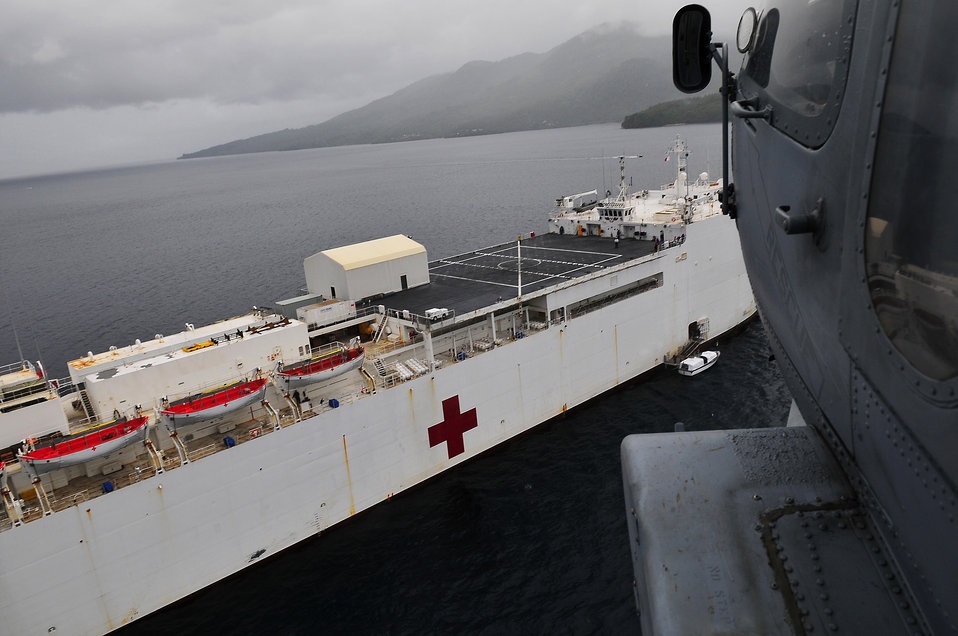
An MH-60S Knighthawk Comes in for a Landing

An MH-60S Knighthawk, from Helicopter Sea Combat (HSC) Squadron 23 “Wild Cards”, comes in for a landing to the Military Sealift Command hospital ship USNS Mercy (T-AH 19) on July 21, 2010, in Ternate, Indonesia. Mercy is deployed for Pacific Partnership 2010, the fifth in a series of annual U.S. Pacific Fleet endeavors conducted in Indonesia as a disaster relief exercise aimed at strengthening regional partnerships.